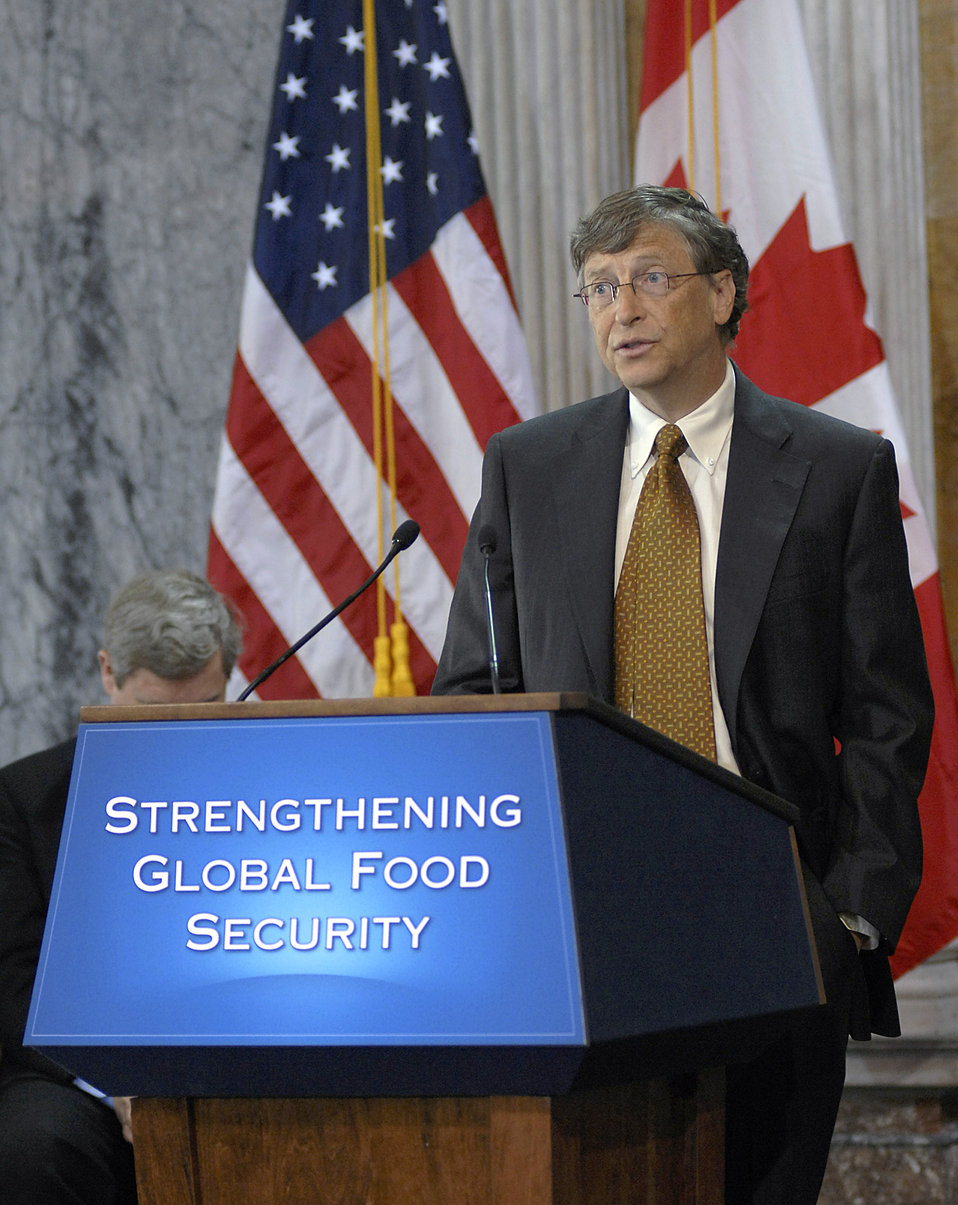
Announcement on International Commitment to Fight Global Hunger and Poverty, 4/22/2010

Bill Gates speaks at the announcement of international commitment to fight global hunger and poverty at the Treasury Department April 22, 2010.